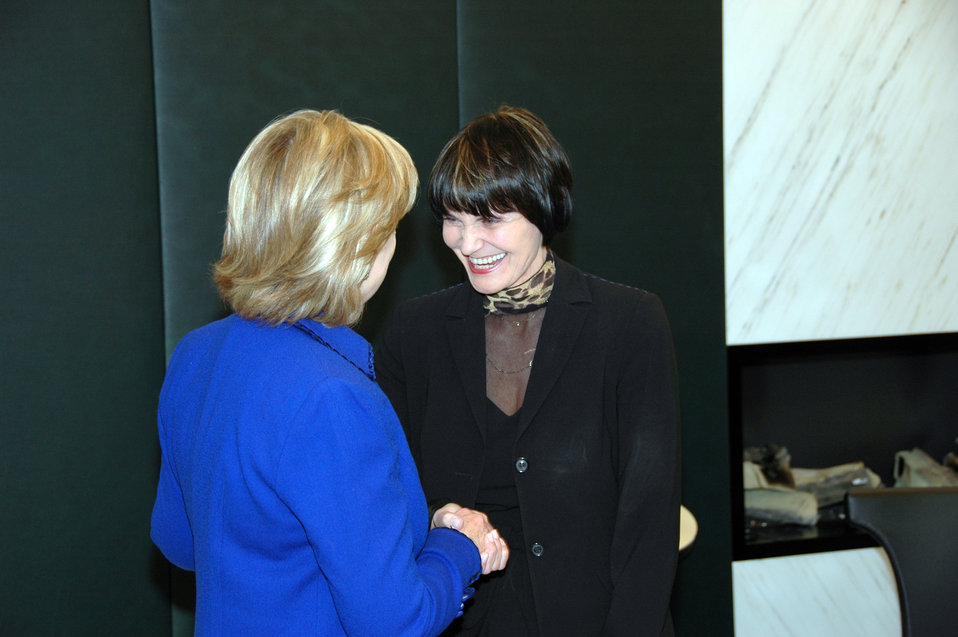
Secretary Clinton Meets Swiss Foreign Minister

U.S. Secretary of State Hillary Rodham Clinton with Swiss Foreign Minister Micheline Calmy-Rey in Zurich, Switzerland October 9, 2009.